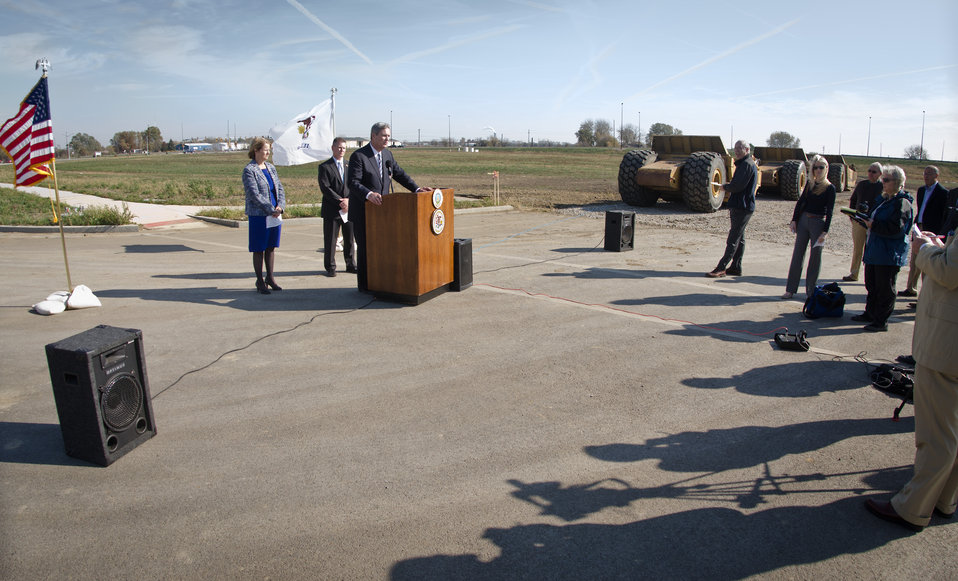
U.S. Department of Agriculture Secretary Tom Vilsack (at podium), Illinois Department of Transportation Acting Secretary of Transportation Ann Schneider (center) and Sangamon County Recorder of Deeds (left) visited a recently completed transportation project that extended the existing MacArthur Boulevard and new interchange with Interstate 72, that brought new businesses and 500 new jobs to Springfield, IL on November 2, 2011. Agriculture Secretary Tom Vilsack discussed the Administration's strategy to strengthen the U.S. economy and to highlight what passage of the American Jobs Act will mean for Illinois. 'The American Jobs Act provides common-sense steps we can take right now to put more people back to work and put more money in the pockets of working Americans, without adding a dime to the deficit,' said Secretary Vilsack. 'In Illinois, this Act will provide a tax cut for over 260,000 businesses, support the jobs of 14,500 teachers and first responders and immediately provide a job for over 20,700 construction workers through infrastructure improvements. A typical household in Illinois will receive a tax cut of around $1,640.'